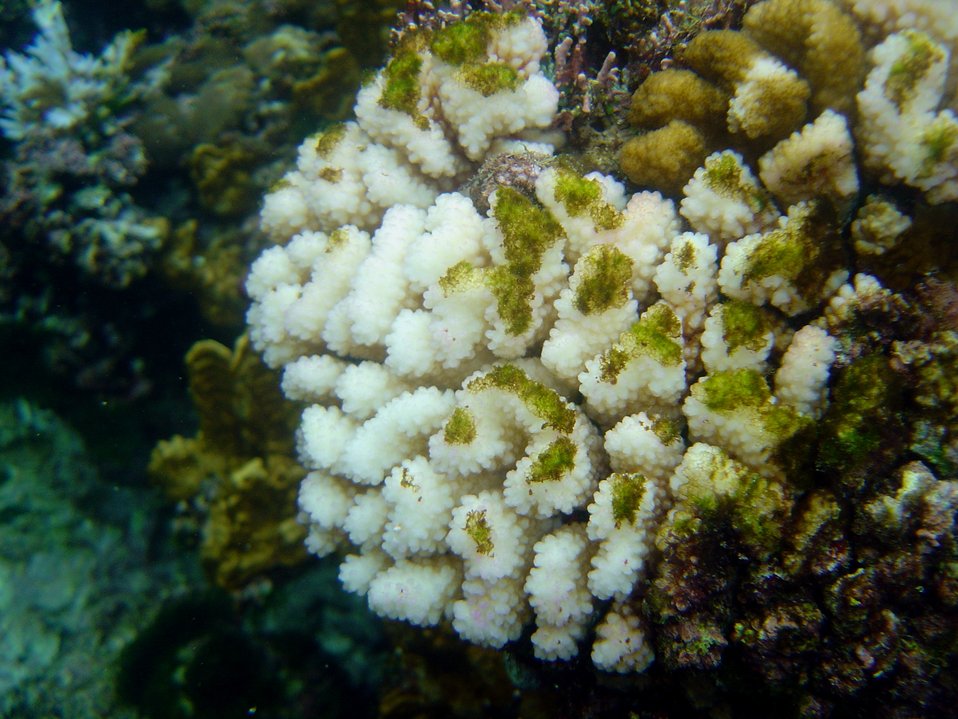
Coral bleaching